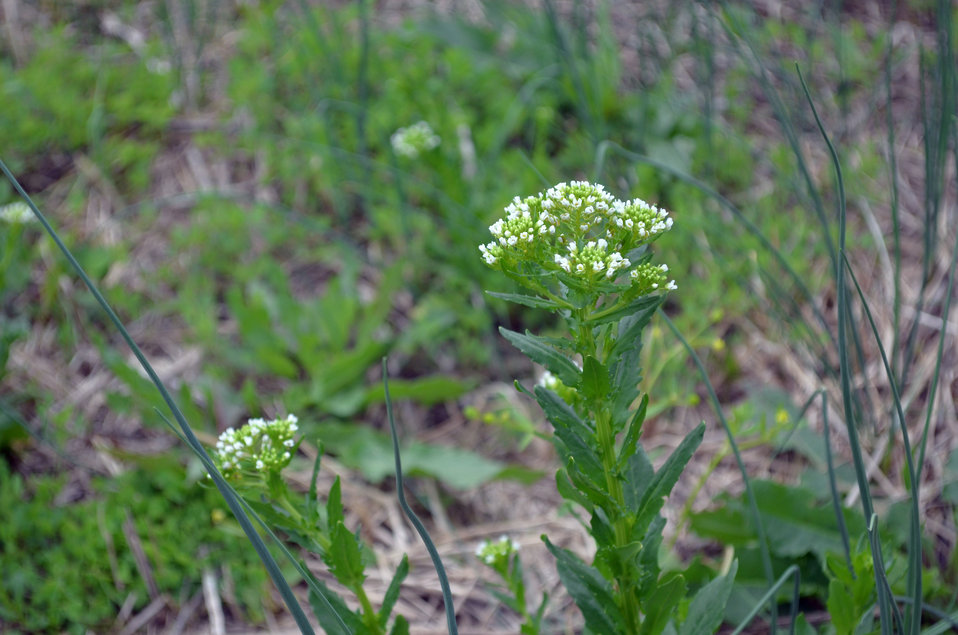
Wildflowers